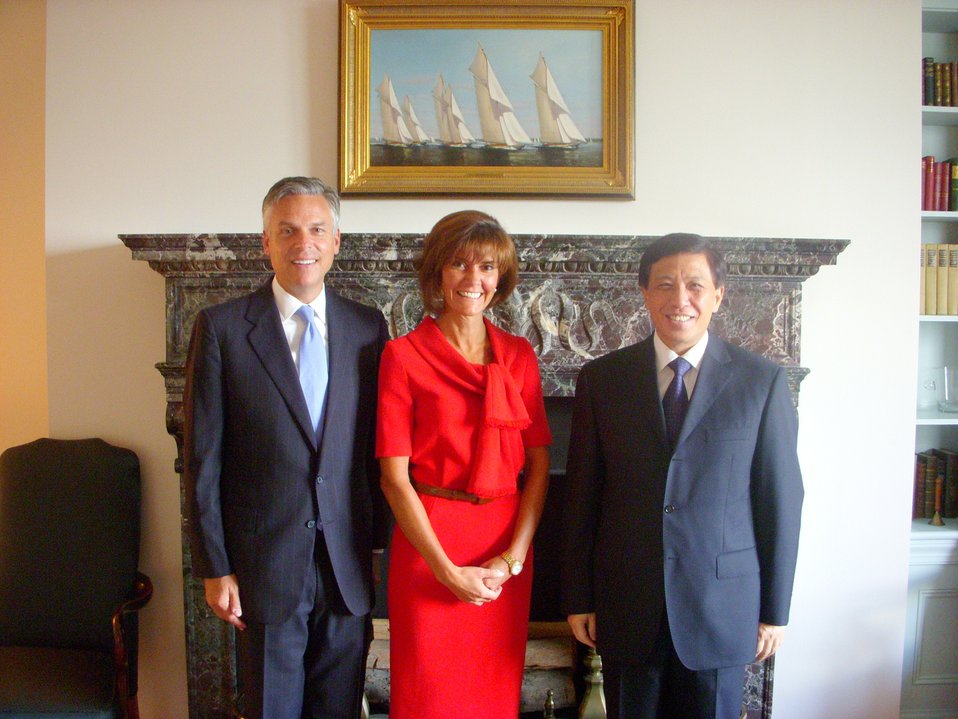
U.S. CPR Ambassador Marshall Poses for a Photo With U.S. Ambassador Huntsman and Chinese Ambassador Yesui

U.S. Chief of Protocol Ambassador Capricia Penavic Marshall poses for a photo with U.S. Ambassador to the People’s Republic of China Jon Huntsman and Zhang Yesui, Ambassador of the People’s Republic of China to the United States, in Washington, D.C., on August 25, 2010.